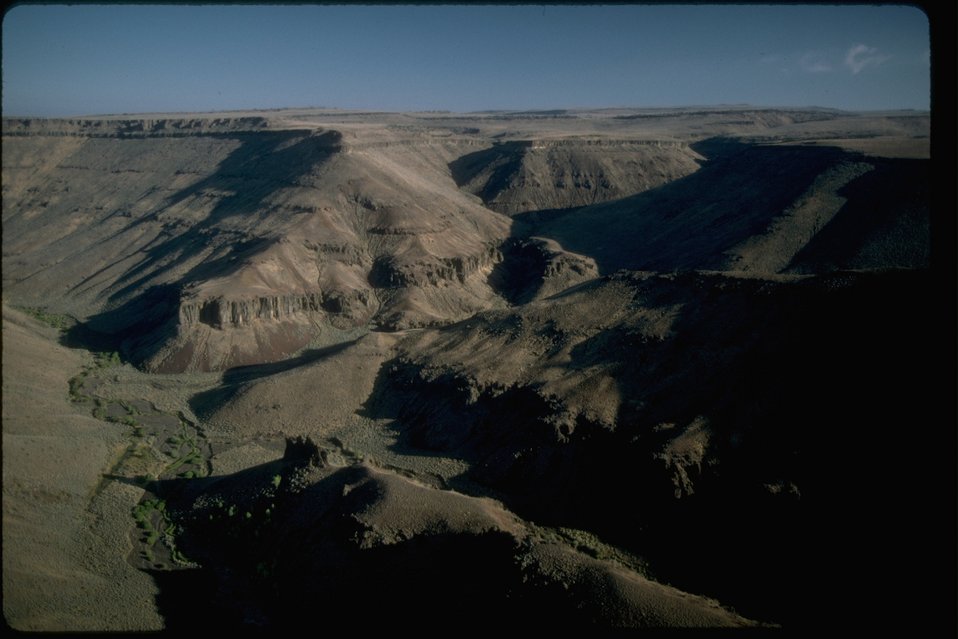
Scenic aerial shot of Trout Creek. OR 3-156